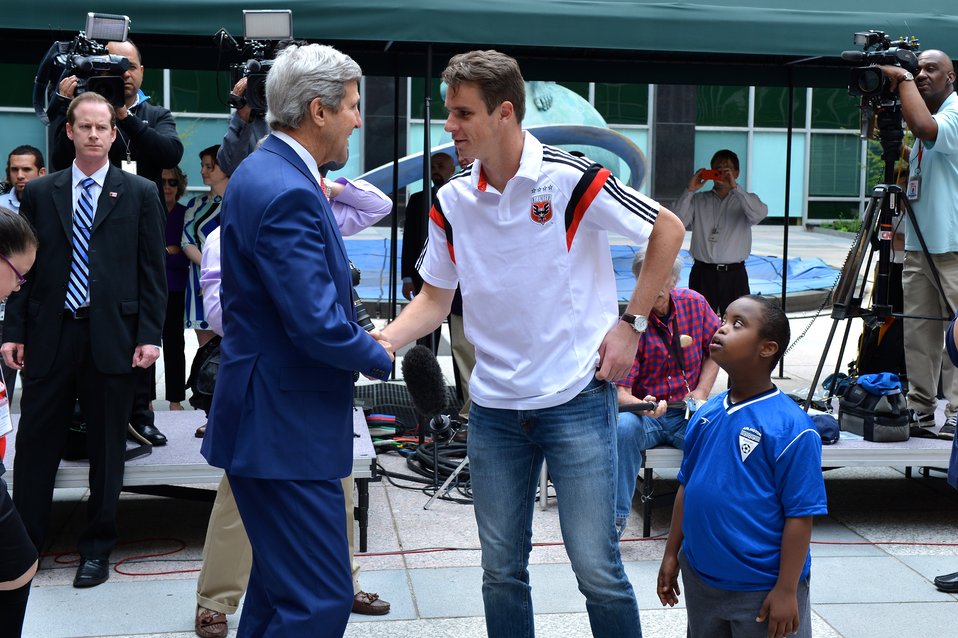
Secretary Kerry Chats With a DC United Player

U.S. Secretary of State John Kerry chats with a DC United player during a sports diplomacy event at the U.S. Department of State in Washington, D.C., on April 14, 2014.